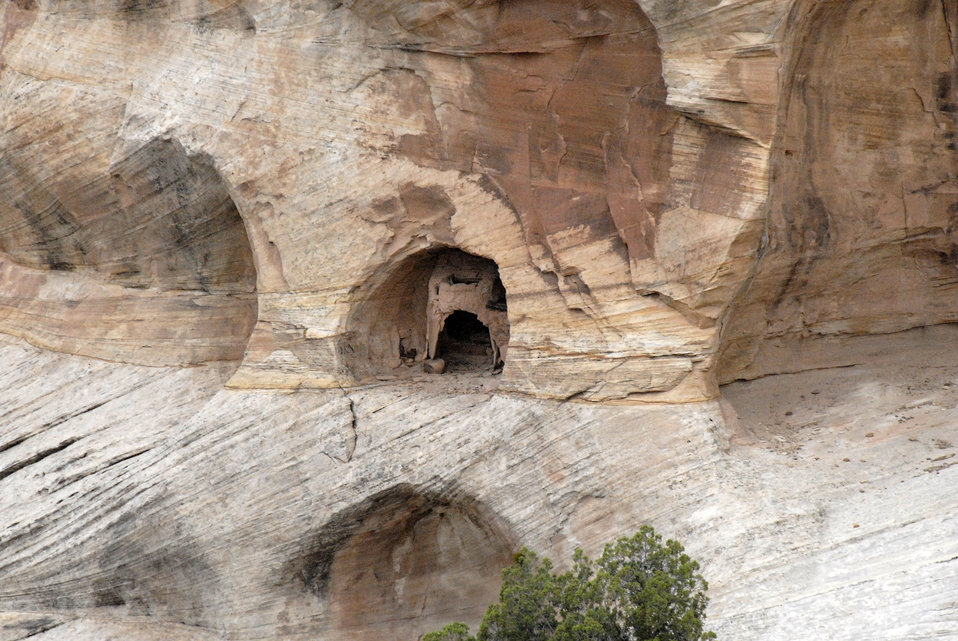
Yucca Cave in Canyon de Chelly National Monument in Chinle, Arizona on September 11, 2008.